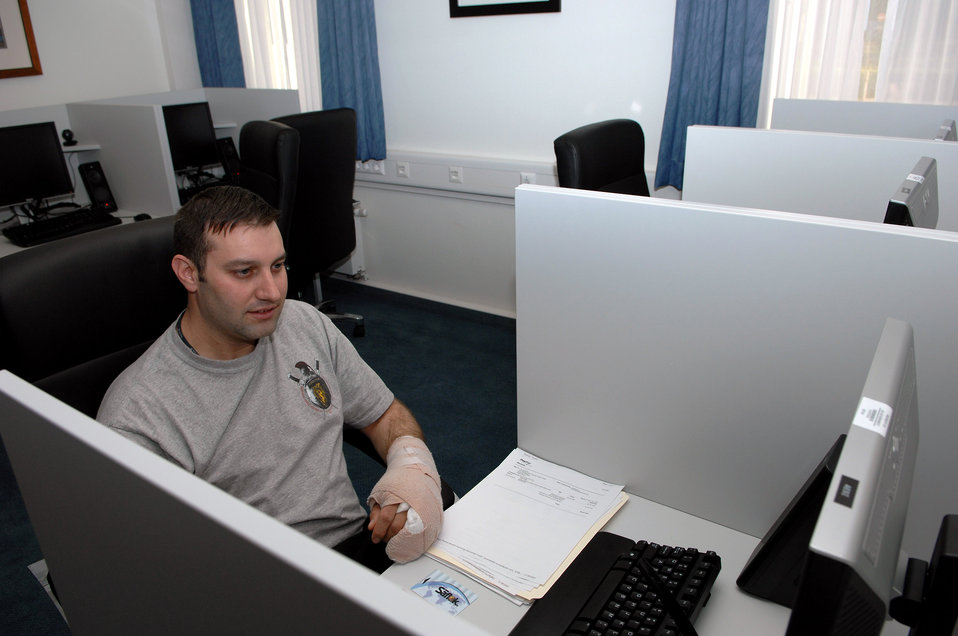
USAFE answers call of wounded warriors

Army Capt. Joe Denning spends time surfing the internet Nov. 28 at the medical transient detachment building while recovering from hand surgery at Landstuhl Regional Medical Center, Germany. Captain Denning is the military transition team logistics officer from the 4th Brigade Combat team, 25th Infantry Division.